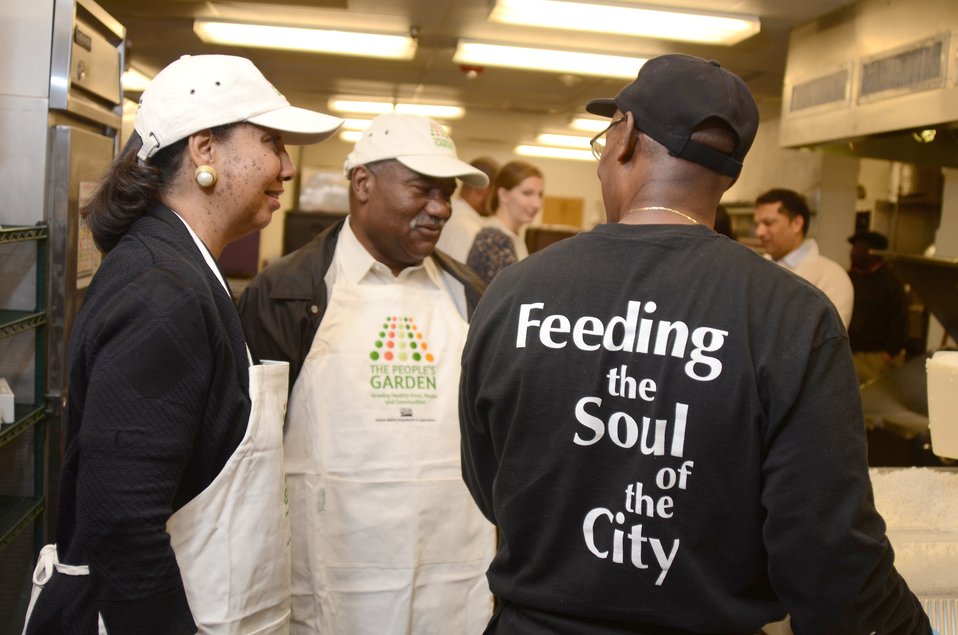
Dr. Alma Hobbs, Associate Assistant Secretary for Administration; Pearlie Reed, Assistant Secretary for Administration and Gregory Jones, D.C. Kitchen employee talk after preparing the evening meal at the D.C. Central Kitchen during USDA’s National Service Day on January 12, 2012. NSD honors Dr. Martin Luther Kings’s contributions to the Civil Rights Movement. The D.C. Central Kitchen turns leftover food into millions of meals for thousands of at-risk individuals while offering nationally recognized culinary job training to once homeless and hungry adults.